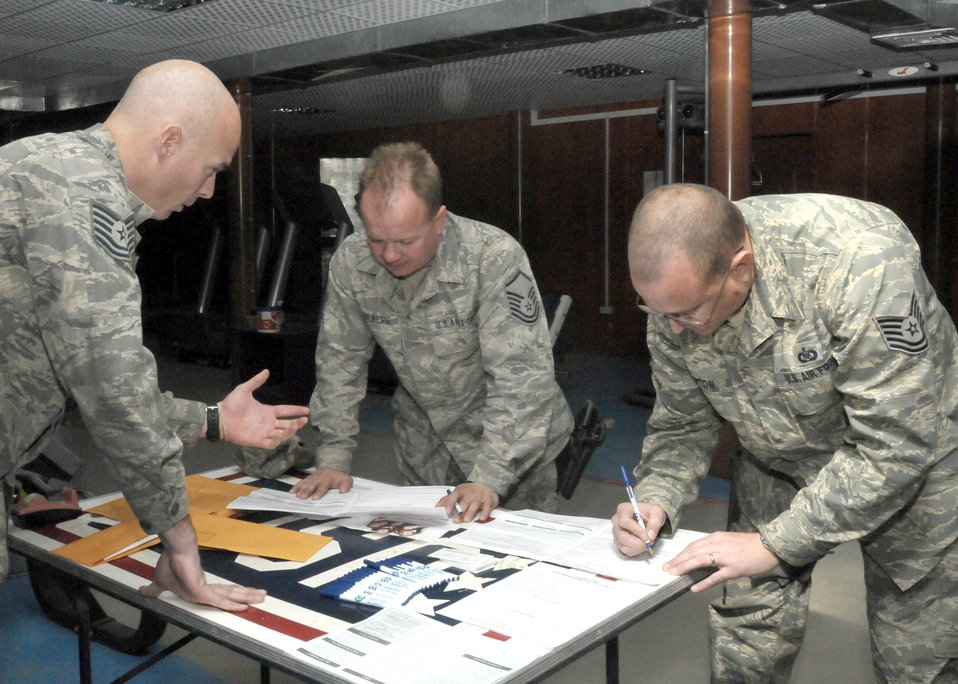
Lyla

Tech. Sgt. Chad McCollum informs troops about the benefits of donating bone marrow Dec. 9, 2010. Sergeant McCollum petitioned servicemembers to put their name on the registry for the C.W. Bill Young Marrow Donor Program.